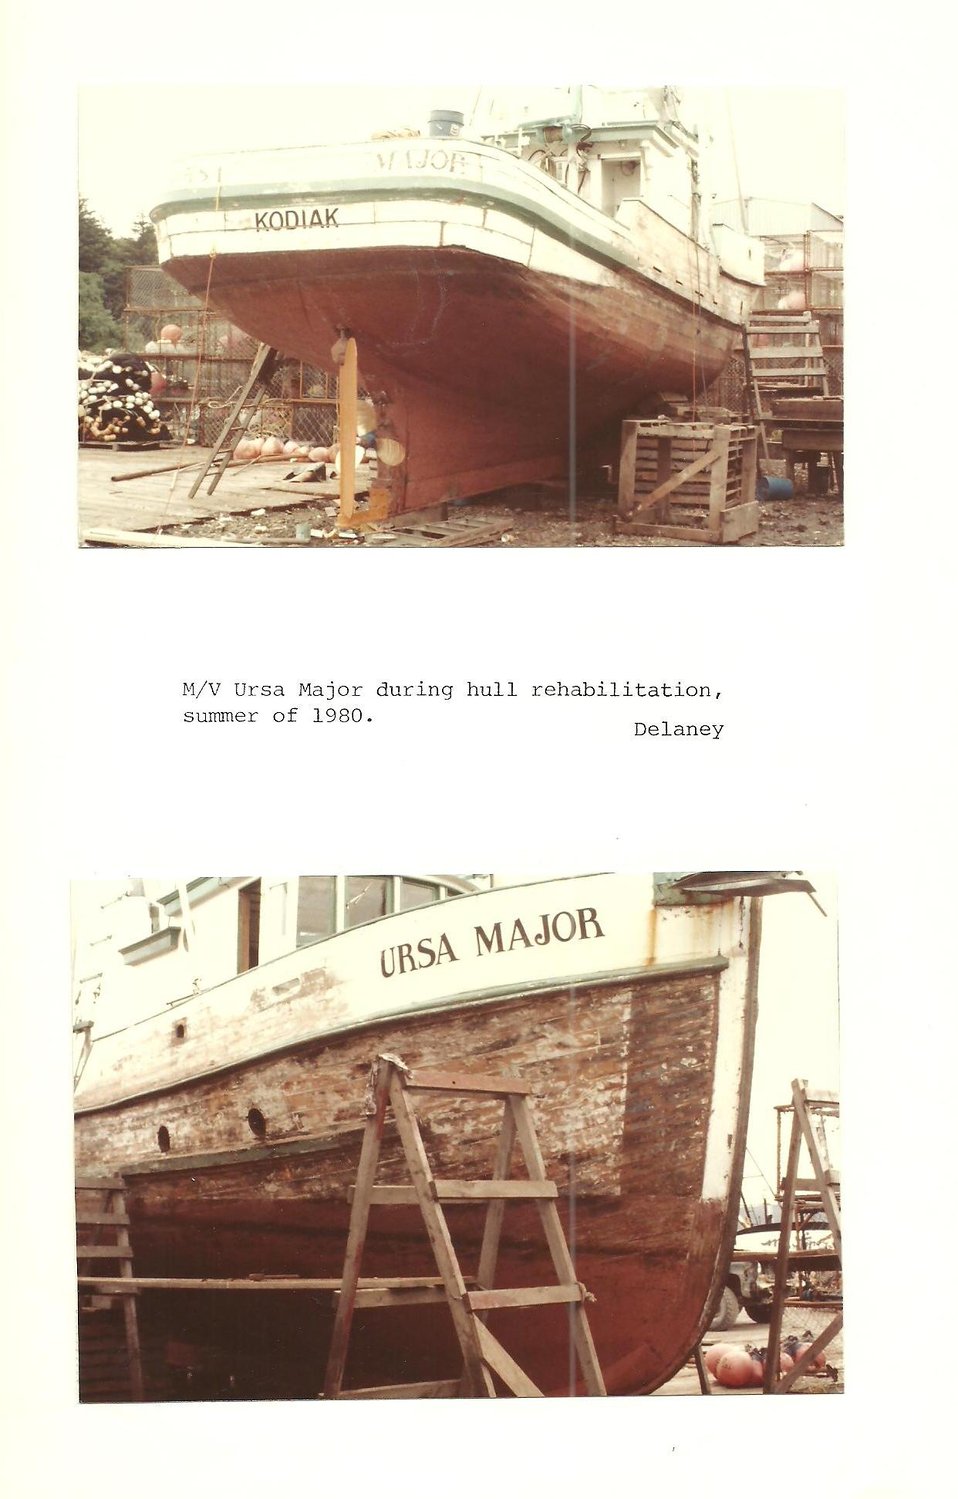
(1980) Ursa Major

Credit: USFWS

Source and Contact: Kodiak National Wildlife Refuge